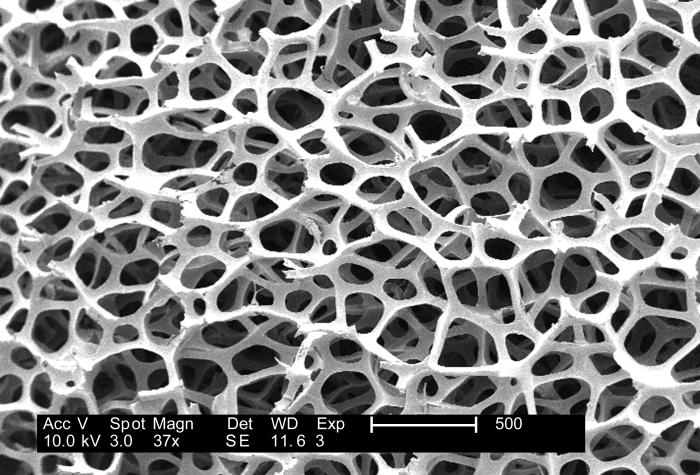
Under a low magnification of 37x, this 2007 scanning electron micrograph (SEM) depicted the fibrous configuration of a dry macrofoam sponge swabs. This swab, as well as three other materials, including polyester (see PHIL 9735), rayon (see PHIL 9734) and cotton (see PHIL 9732, and 9733), were scanned for a CDC study involving their efficiency in recovery of Bacillus anthracis bacterial spores from steel coupons that had been inoculated with a spore suspension of known concentration. See PHIL 9736, 9737, 9738, 9750, 9751, an 9752, for other views of this material. The article discussing the description of this swab material analysis, and the analytical results was published in 'Emerging Infectious Diseases', Vol. 10, No. 6, June, 2004, and was entitled, Swab Materials and Bacillus anthracis Spore Recovery from Nonporous Surfaces. A link to this article is found below.